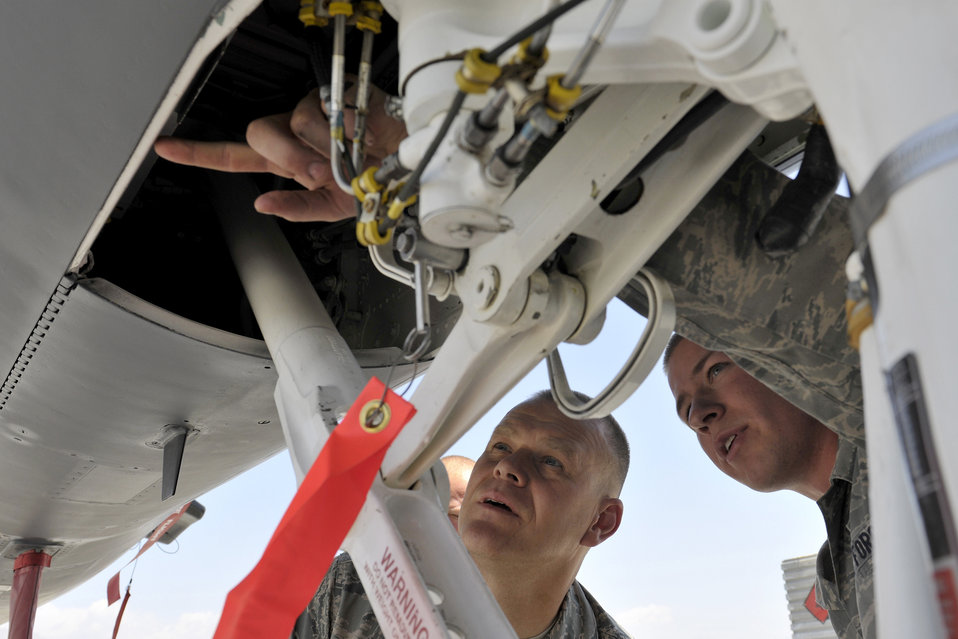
CMSAF visits Bagram

Chief Master Sergeant of the Air Force James A. Roy receives a tour of an F-15E Strike Eagle from Airman 1st Class Jordan Baker June 25, 2010, at Bagram Airfield, Afghanistan. Airman Baker is an F-15 crew chief assigned to the 455th Expeditionary Maintenance Group.